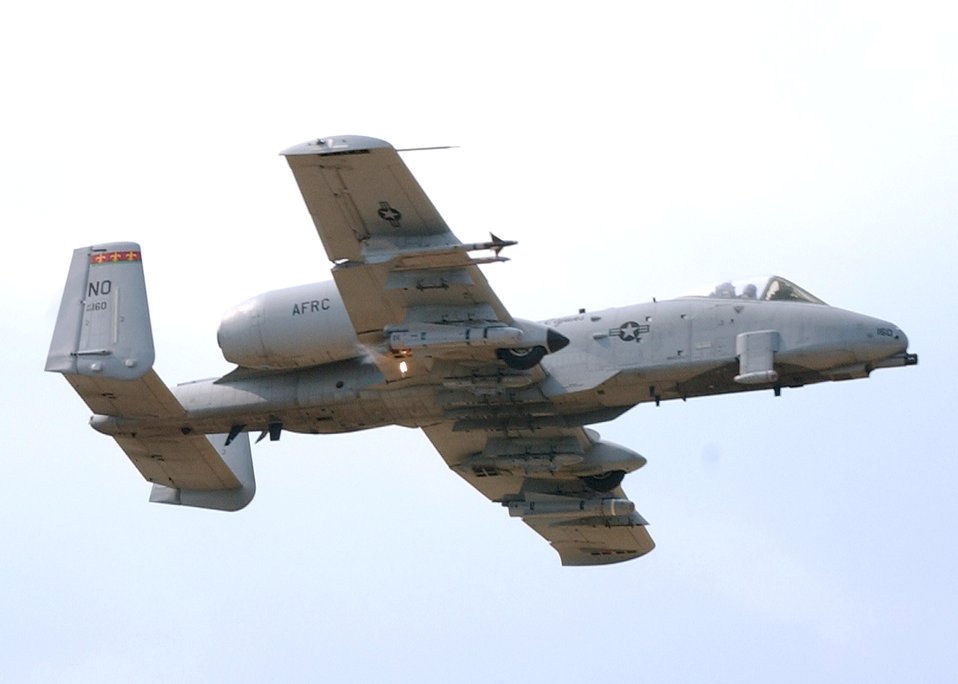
Air Warrior II tests aircrews and controllers

FORT POLK, La. -- An A-10 Thunderbolt II drops a flare after destroying a ground target during a live-fire engagement as part of Air Warrior II here.